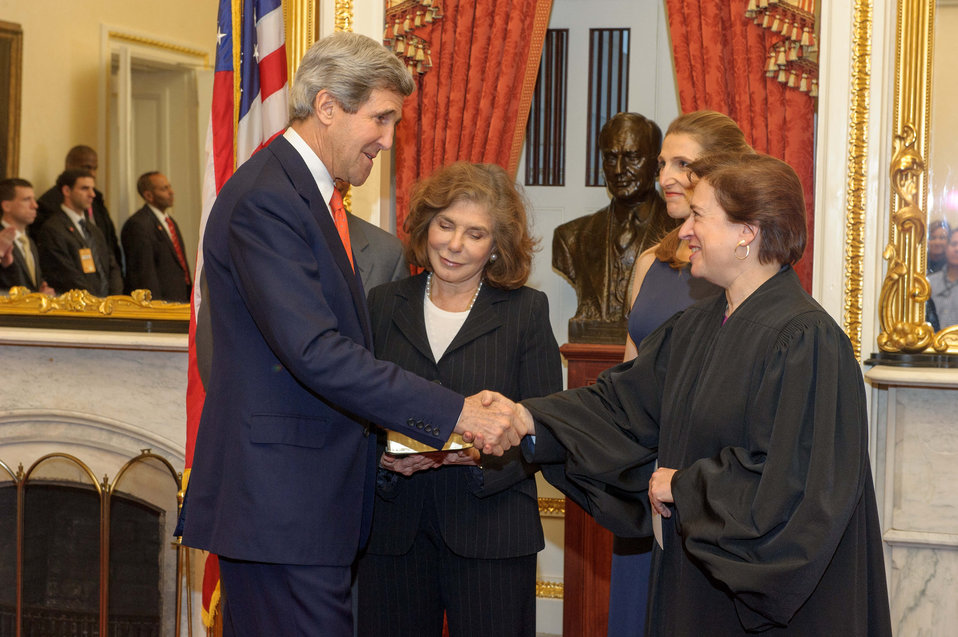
Supreme Court Justice Kagan Swears in Secretary Kerry

Supreme Court Justice Elena Kagan swears in Secretary of State John Kerry on February 1, 2013 in the Foreign Relations Committee Room in the Capitol. They were joined by his wife Teresa, daughter Vanessa, brother Cameron, and his Senate staff.